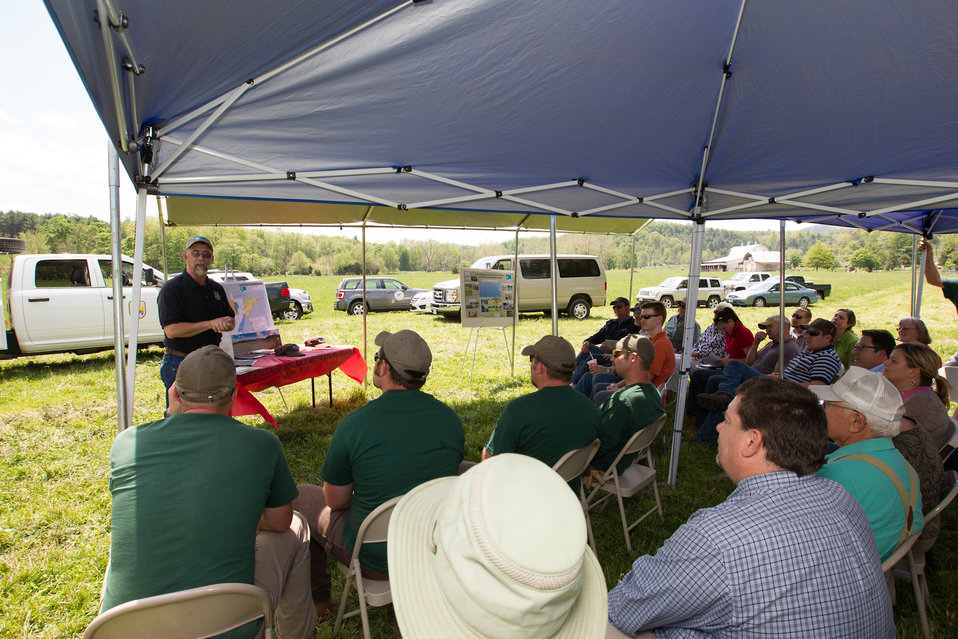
Celebrating 1 Million Feet of Conservation Fence in WV

Partners for Fish and Wildlife Program